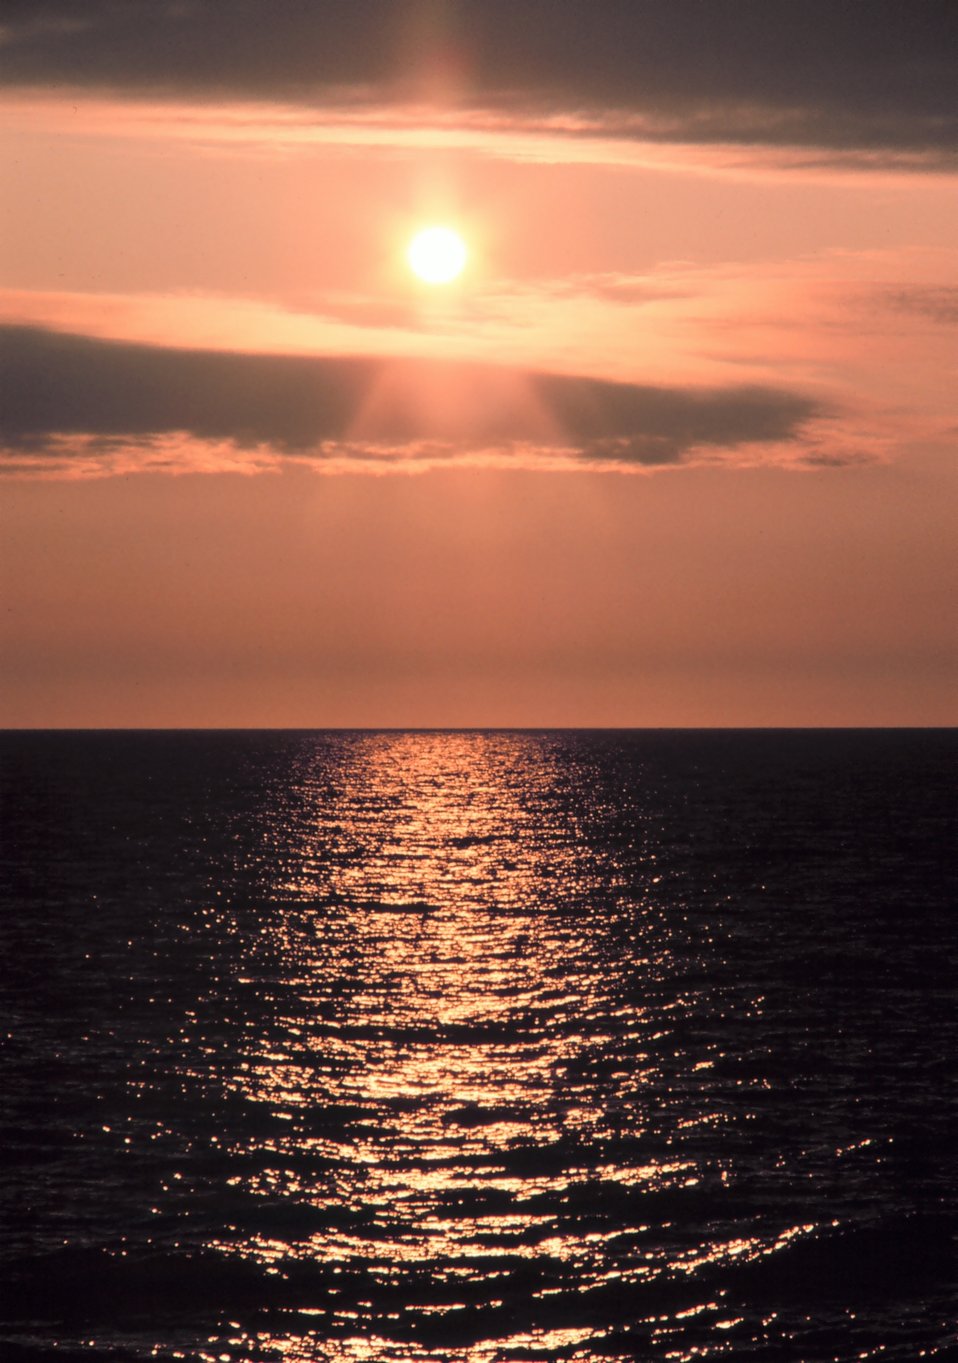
A streak of orange sunlight reflecting off the ocean at sunrise.